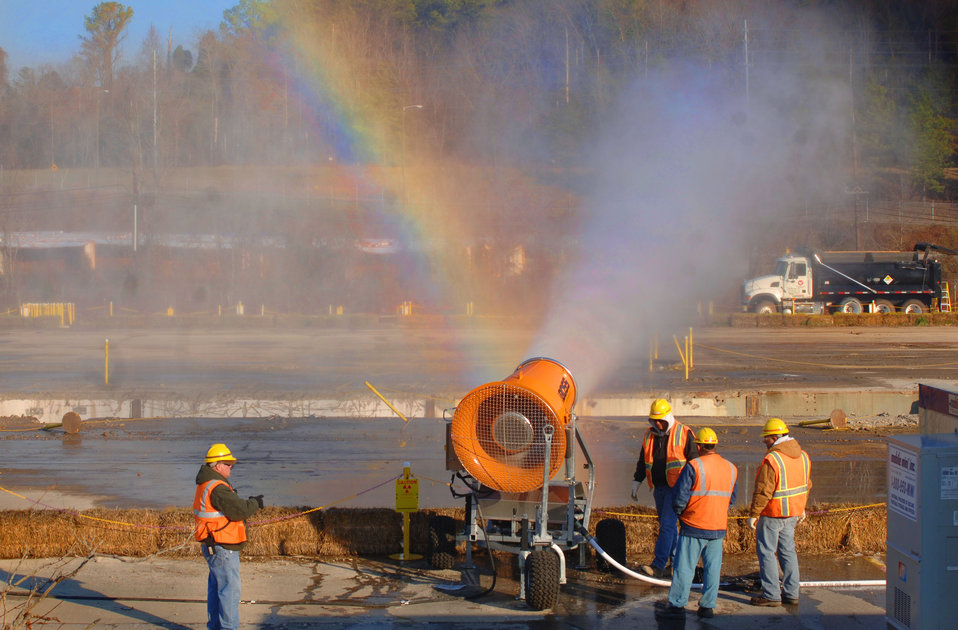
General D and D activity at ETTP K-770 Scrap Yard

06-389-165 DOE photo by Lynn Freeny
Oak Ridge Tennessee Dec. 2006